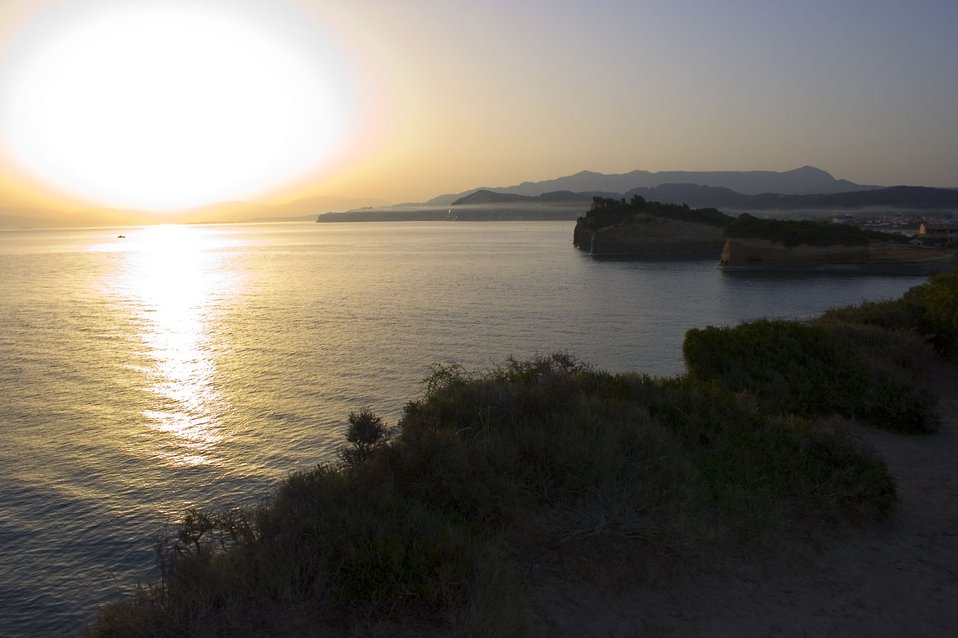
Sunrise on corfu island in greece.